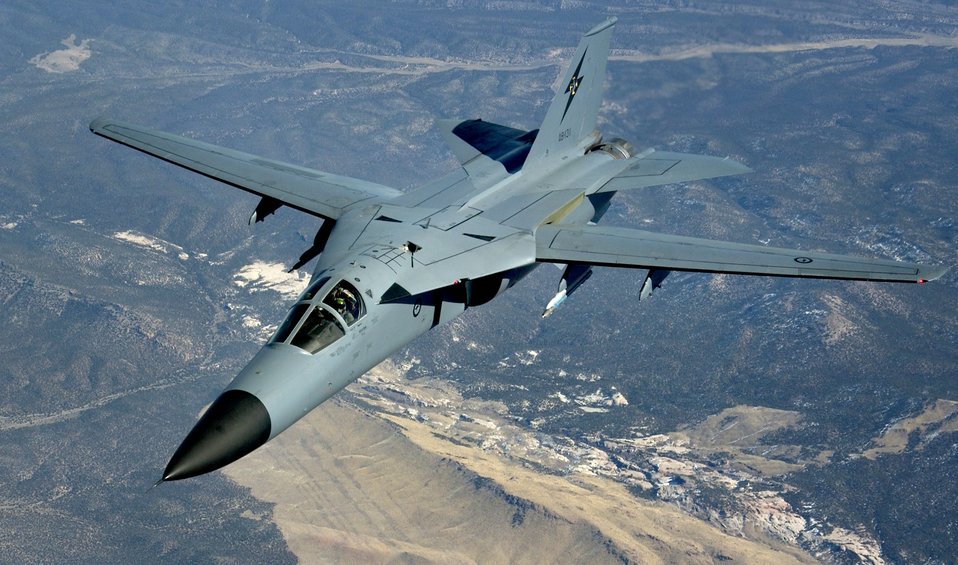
F-111s at Red Flag

NELLIS AIR FORCE BASE, Nev. (AFPN) -- A Royal Australian Air Force F-111 flies to the ranges here Feb. 14 during Red Flag 06-1. Red Flag tests aircrews' warfighting skills in realistic combat situations. The Joint exercise ends Feb. 18.